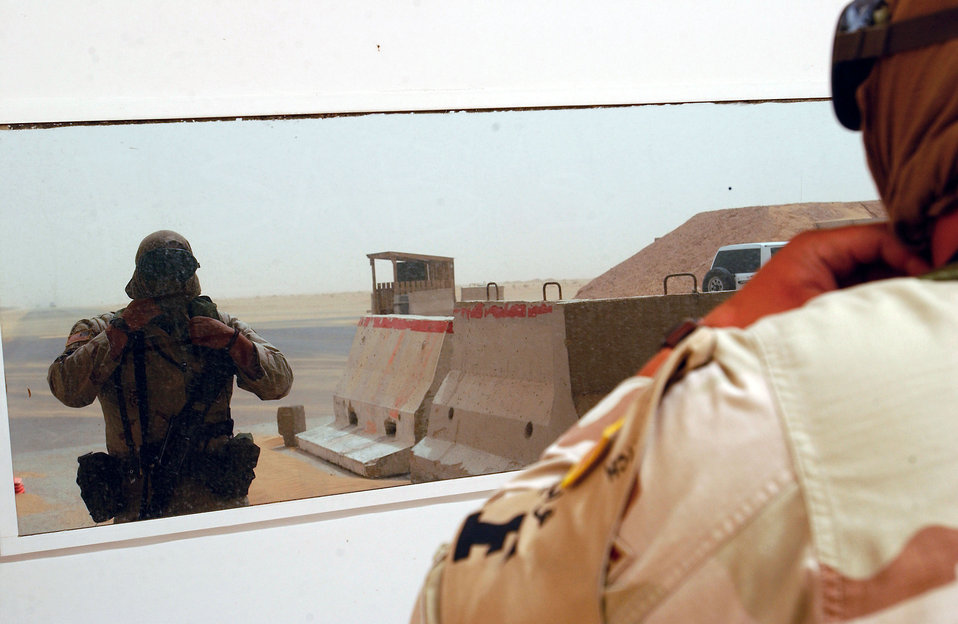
Man in the mirror

OPERATION IRAQI FREEDOM -- An Air Force member deployed to the 363rd Expeditionary Security Forces Squadron adjusts a protective scarf during a sand storm at an entry control point on April 7.